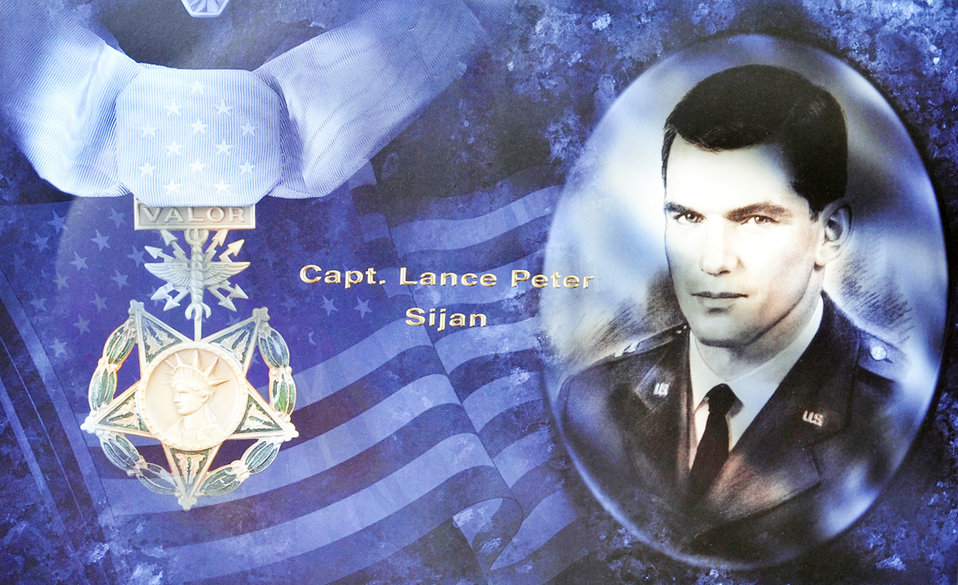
Sijan Award

The annual Capt. Lance P. Sijan Award recognizes the accomplishments of officers and enlisted members who have demonstrated the highest qualities of leadership in the performance of their duties and the conduct of their lives.